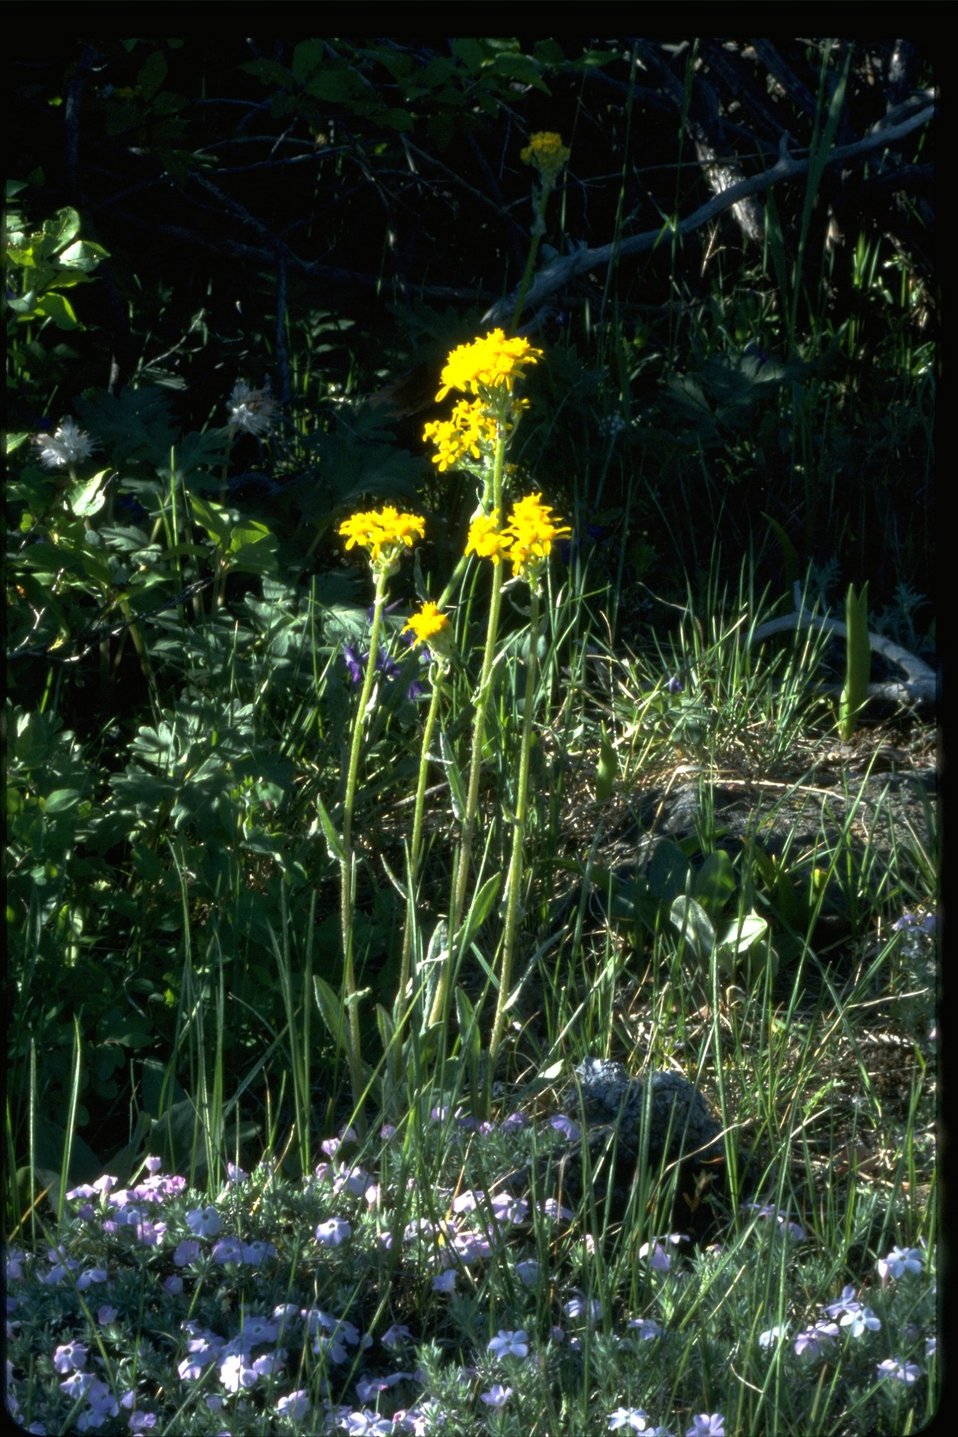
Medium shot of Arrowleaf Groundsel.